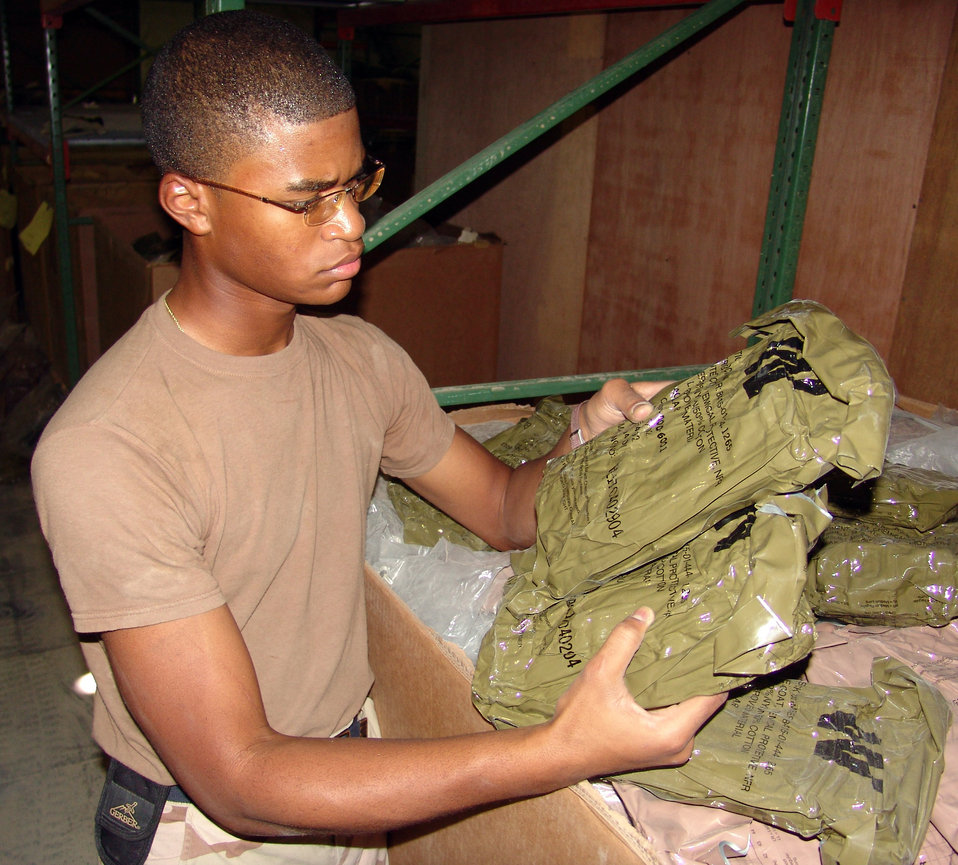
Supply issues

SOUTHWEST ASIA -- Airman 1st Class Antonio Harris inspects sealed chemical warfare ensembles for tears that would make them unusable. Along with other mobility items stored inside the warehouse, Airman Harris ensures that various types of mobility equipment are serviceable, organized and accounted for. He is assigned to the 386th Expeditionary Logistics Readiness Squadron at a forward-deployed location and is from Lackland Air Force Base, Texas.